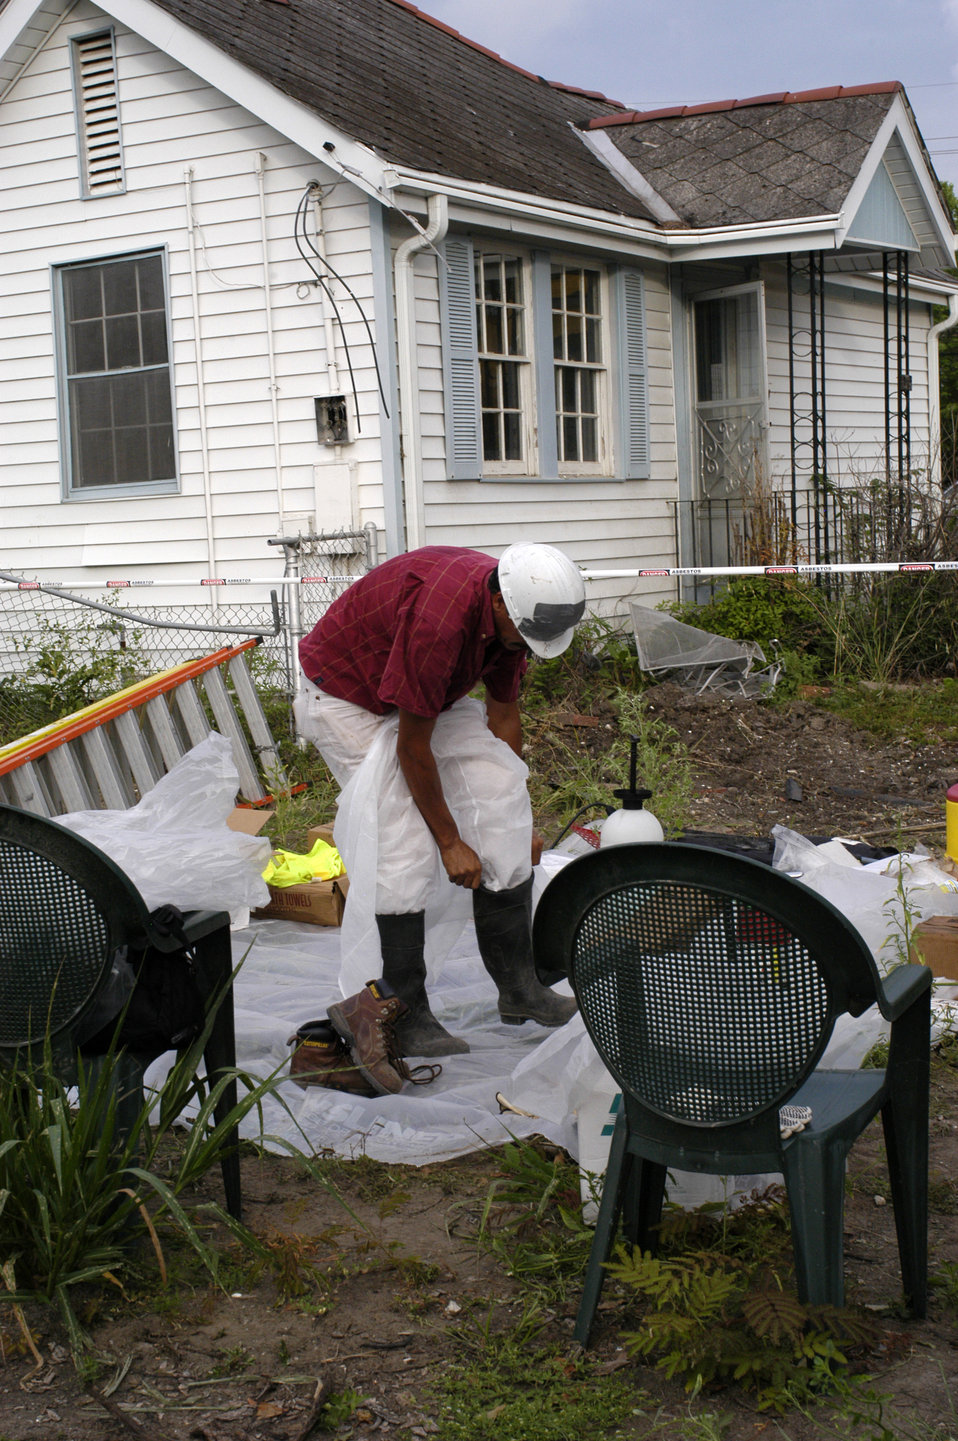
Many of the older homes and buildings in the New Orleans, LA, locale that were destroyed by Hurricane Katrina contained asbestos material (i.e. asbestos roofing tiles, transite siding, insulation, floor tiles, and popcorn ceilings). The U.S. Army Corps of Engineers (USACE) was mandated to follow strict environmental protocols in the demolition of these homes that were designated Regulated Asbestos Containing Material (RACM) demos. Personnel working inside the “hot zone” wore special suits with a respirator to prevent ingestion of asbestos particulates that might become airborne during the demolition project.